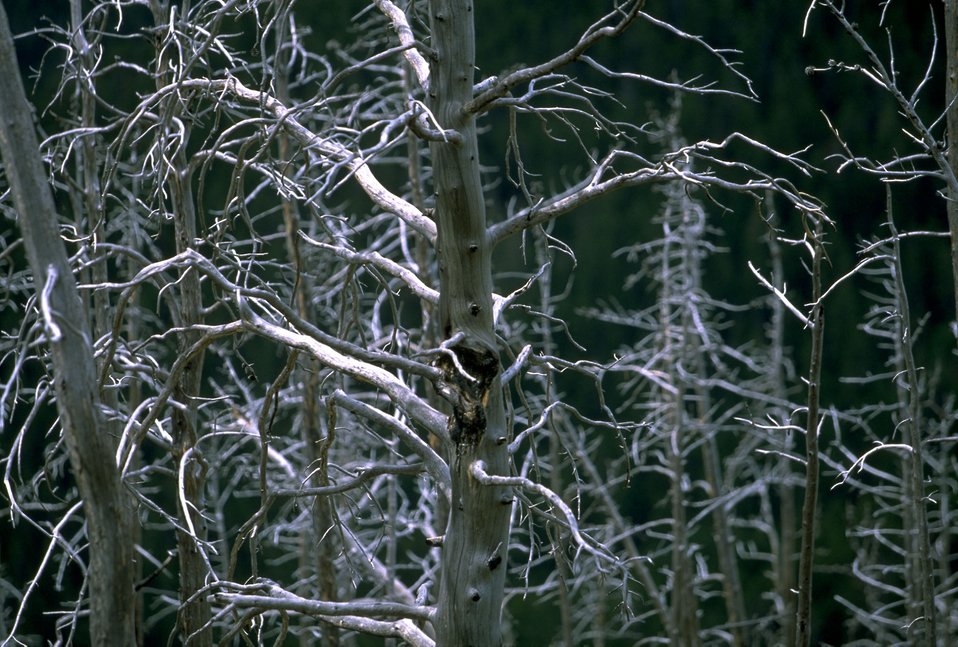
Closeup scenic view of dead trees in the Judith Mountains